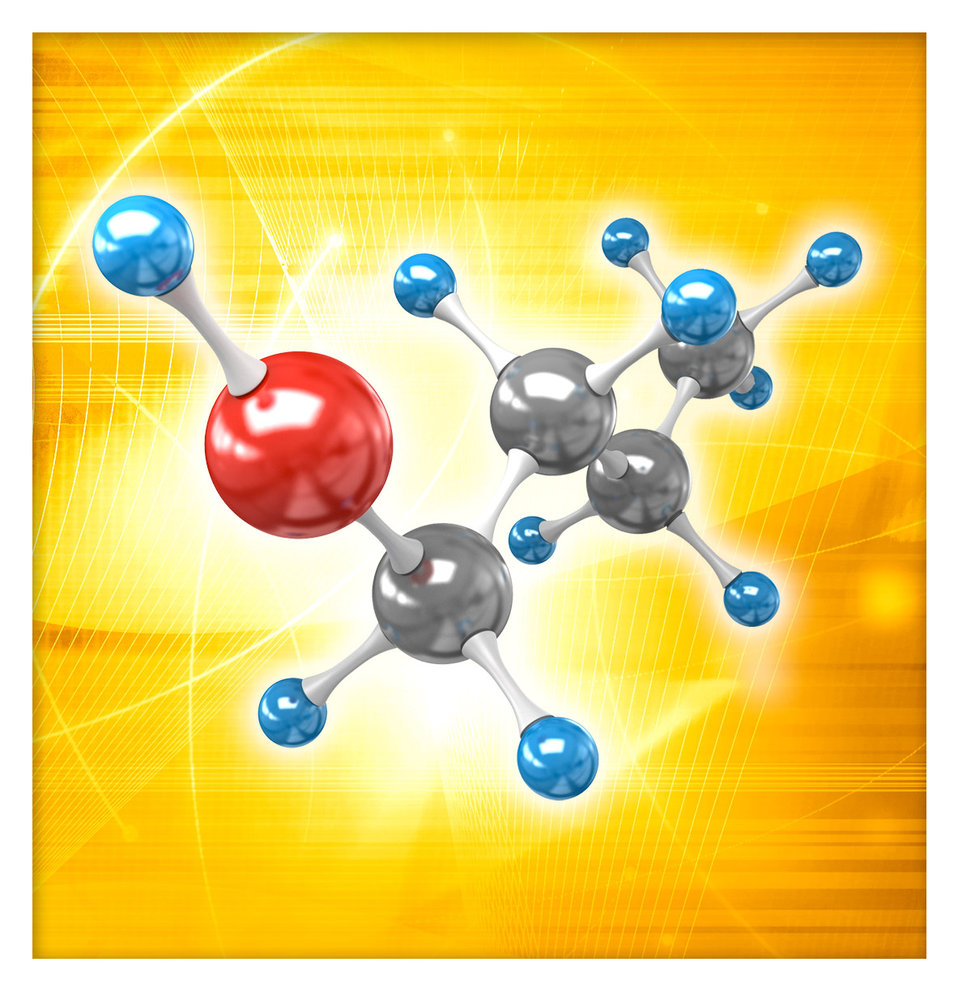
At PNNL, new atomic-level details about how butanol burns, found with the help of EMSL's supercomputer CHINOOK, are making combustion chemistry models more accurate and helping design fuel systems that burn more efficiently and cleanly.